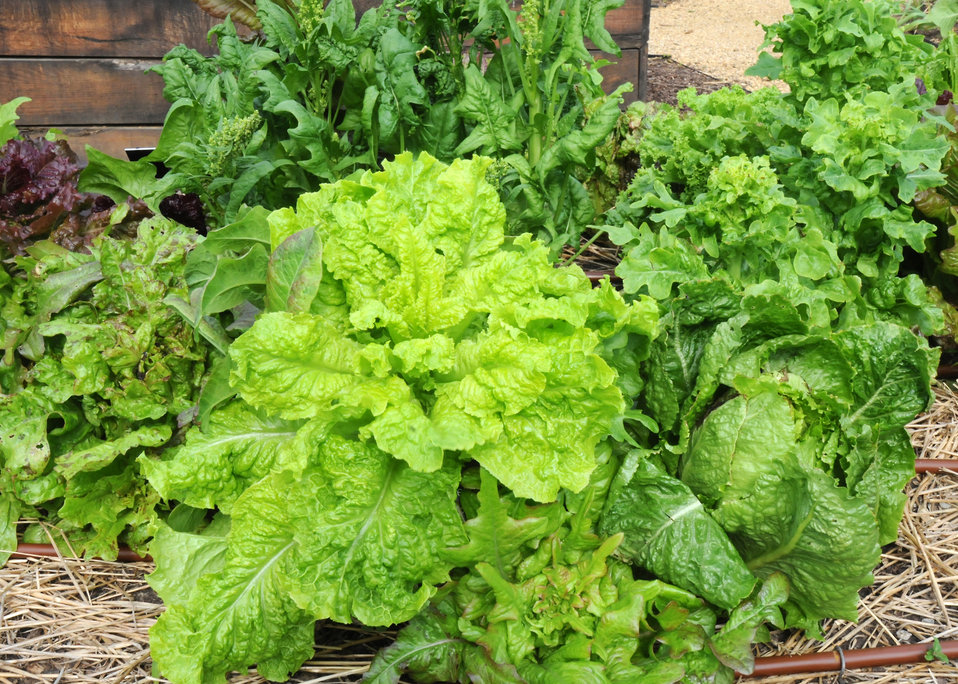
On Friday, May 28, 2010 the US Department of Agriculture People’s Garden in Washington, DC, is ready for the harvesting of its first crop of lettuces. All vegetables harvested are donated to local area food banks. USDA photo 10di1383-17.